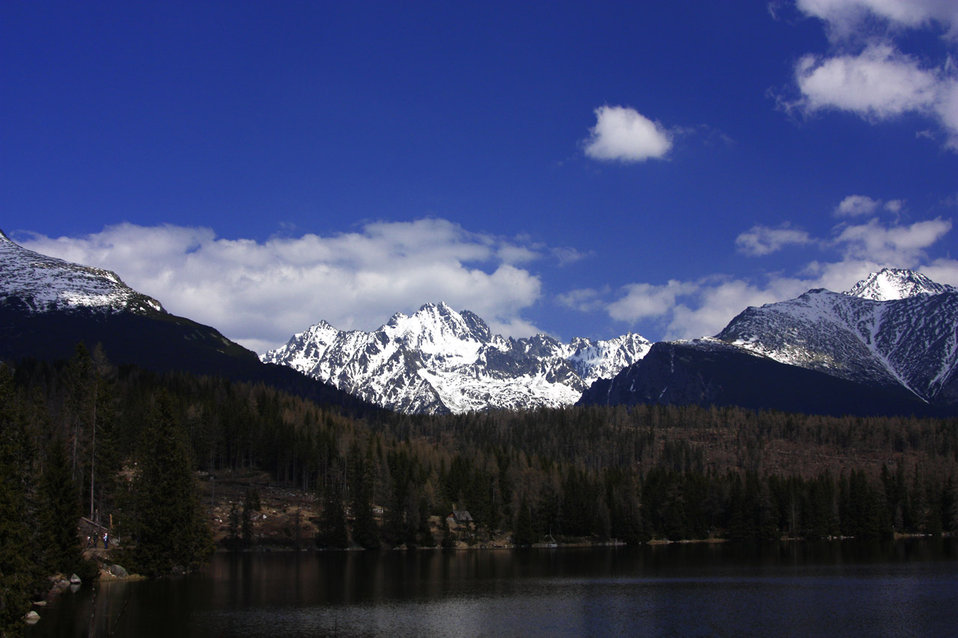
Mountain

High tatras mountain.